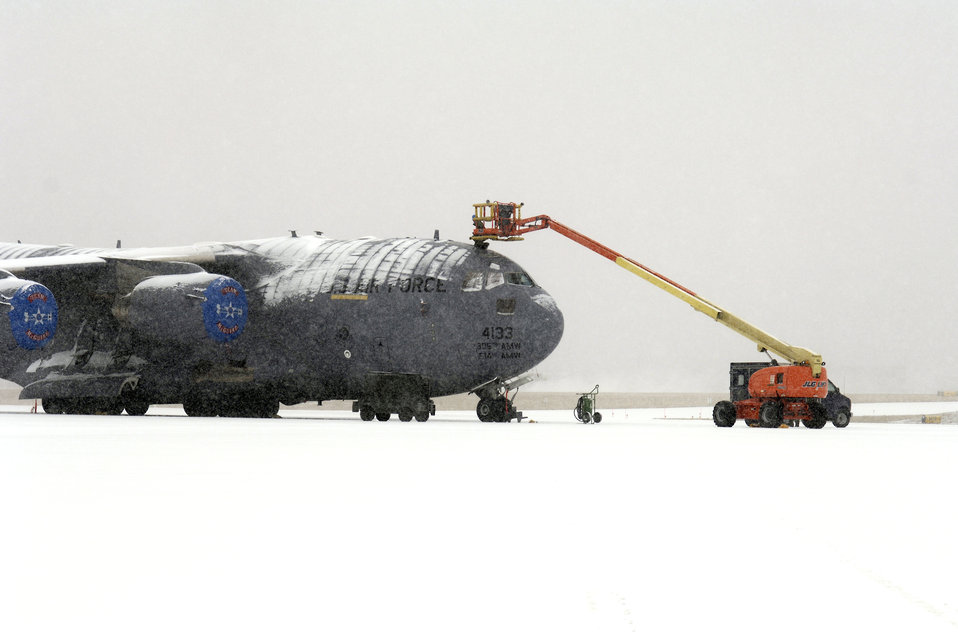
De-ice is nice

Airman Russell Baker, a fuel systems journeyman, sits atop a C-17 Globemaster III to work on the air-refueling receptacle March 7 during a snowstorm that hit McGuire Air Force Base, N.J. Airman Baker is assigned to the 305th Maintenance Squadron.